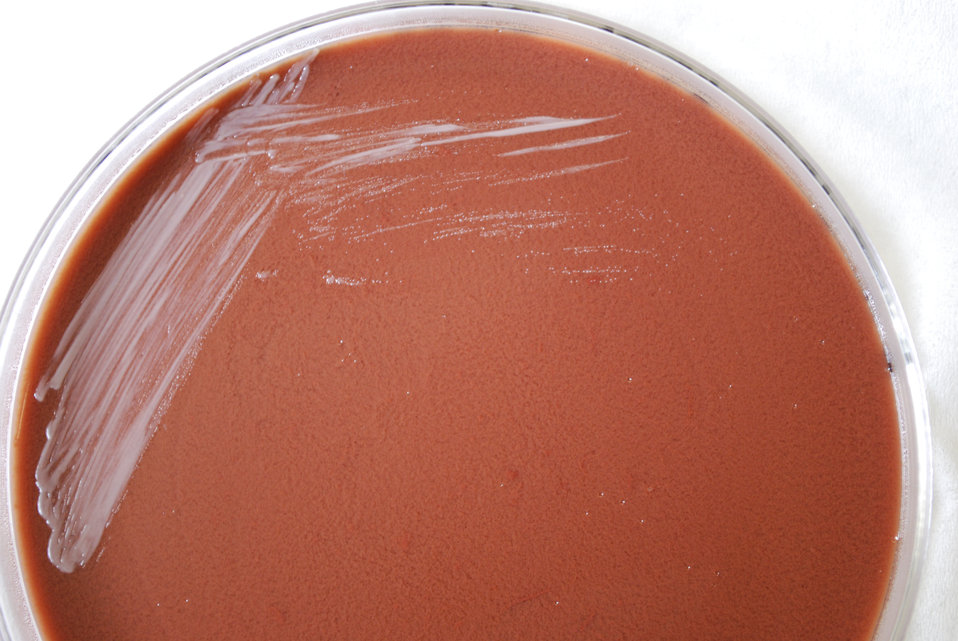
An enlarged view of PHIL 12231, this photograph depicts the colonial morphology displayed by Gram-negative Brucella abortus bacteria, which was grown on a medium of chocolate agar, for a 48 hour time period, at a temperature of 37�C, while incubated in a CO2 incubator.